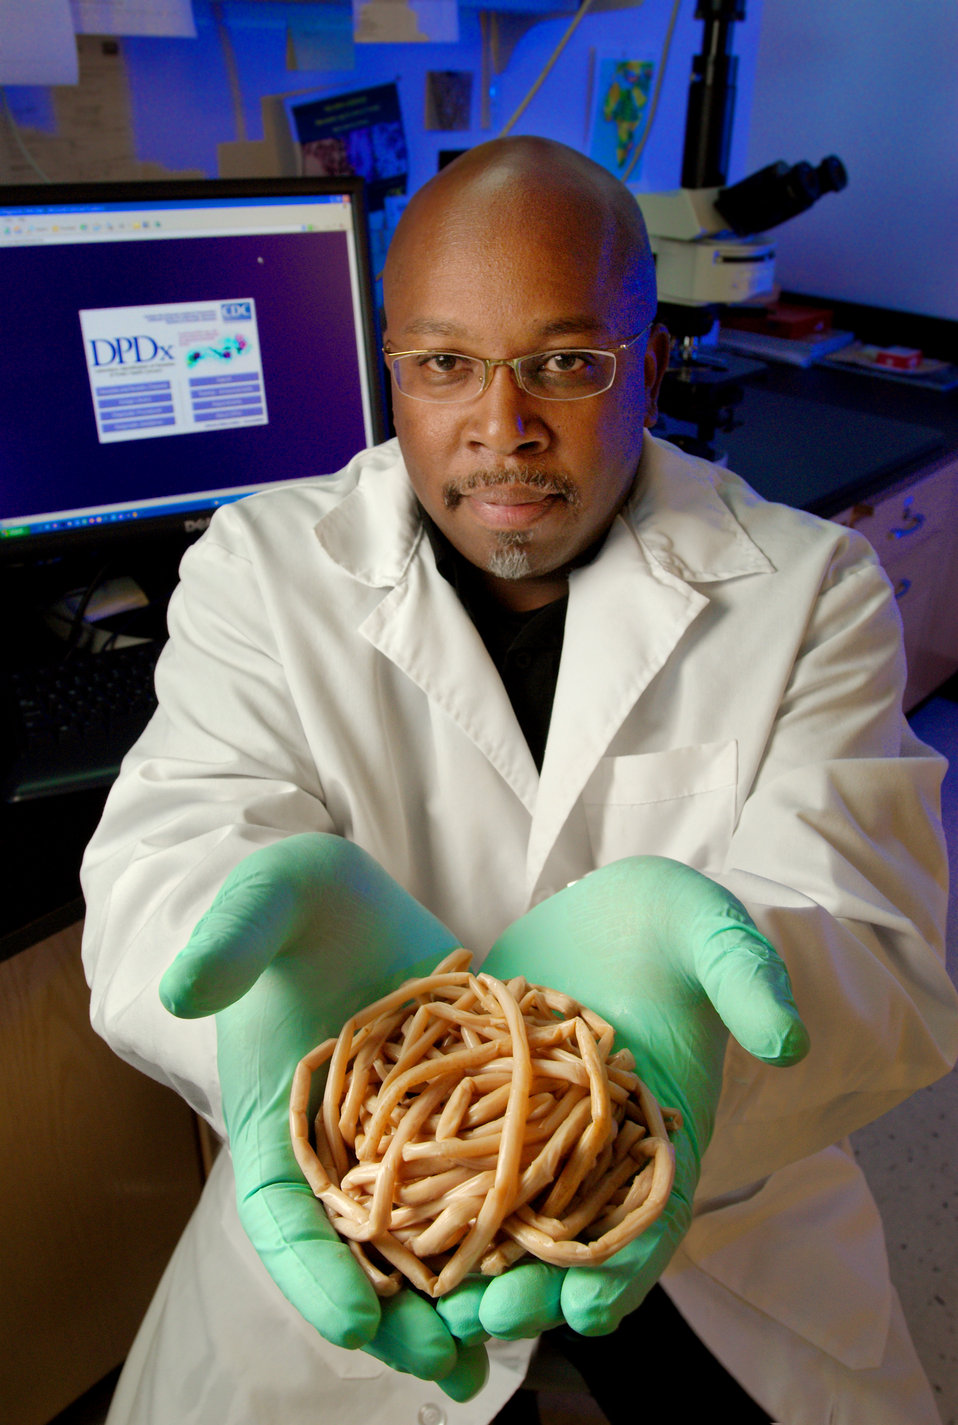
This 2007 photograph depicted Center for Disease Control/ NCZVED/DPD laboratory technician, Henry Bishop holding a mass of Ascaris lumbricoides worms, which had been passed by a child in Kenya, Africa. This nematode parasitizes the human small intestine, and is spread from human to human by the fecal-oral route. Children seem to be infected more often than adults, and though the organisms depicted here originated in Africa, the disease can be acquired in the southeastern United States.